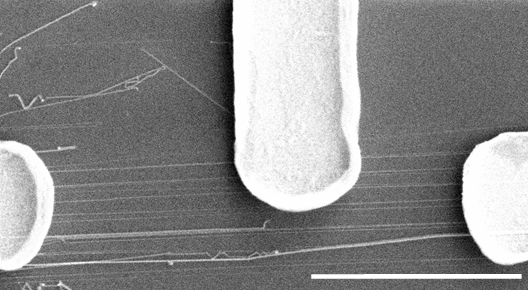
NIST Demos Industrial-Grade Nanowire Device Fabrication

Scanning electron microscope image shows electrodes connected to group of nanowires. Scale bar is five micrometers long.